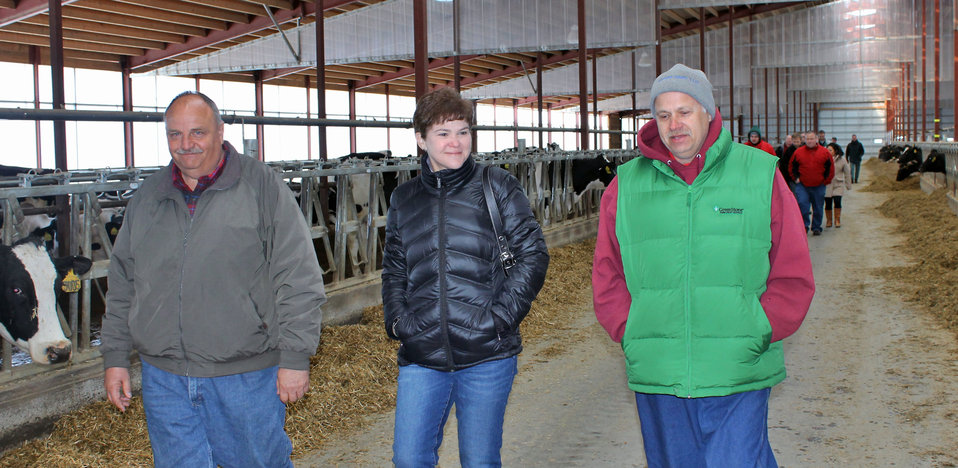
Agriculture Deputy Secretary Krysta Harden walks through the Wayside Dairy barn with U.S. Department of Agriculture (USDA) Natural Resources Conservation Service (NRCS) agent John Malviltz and owner Dan Natzke in Wisconsin on Tuesday, Apr. 15, 2014.